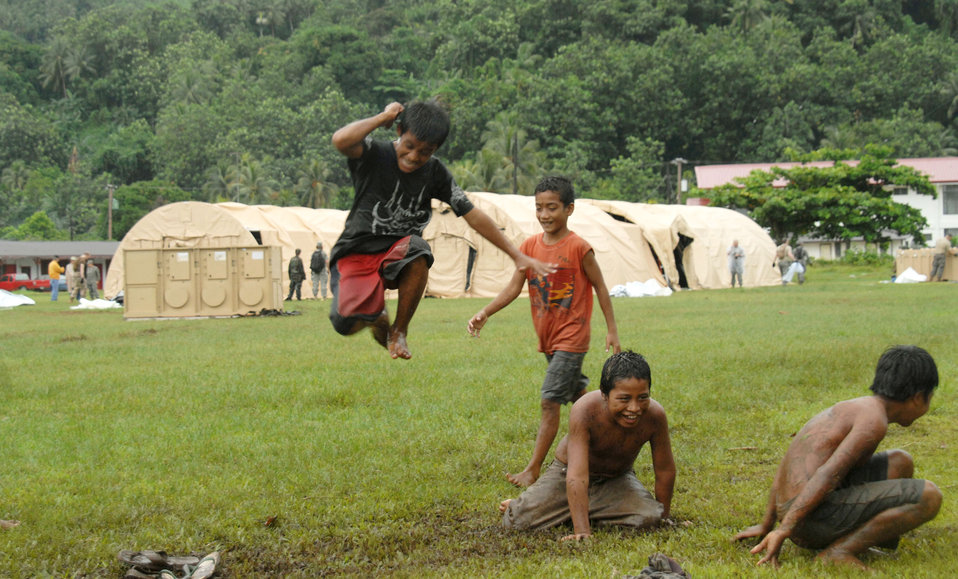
Air Force humanitarian team arrives on Chuuk

Chuukese children play while members of the Humanitarian Assistance Rapid Response Team work together to construct medical tents during a validation exercise Sept. 2, 2009 on Chuuk in the Federated States of Micronesia. The HARRT is the Air Force's new expeditionary medical capability designed to deploy within 24 hours of notice during disaster relief operations. During the deployment, the team will treat 350 to 500 Chuukese patients per day.